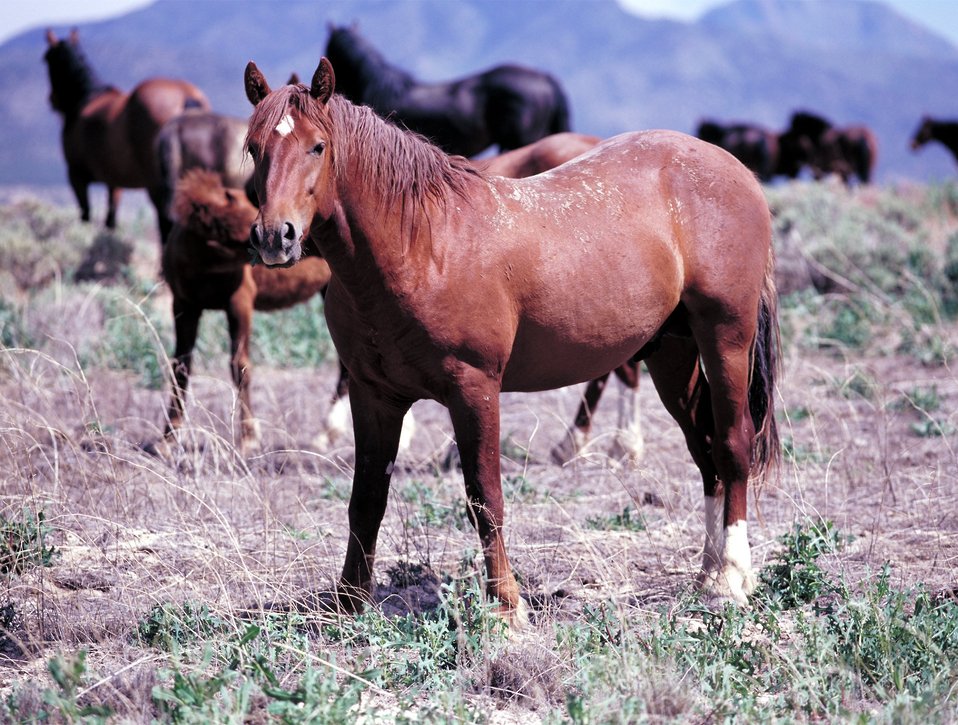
Onaqui Herd near Dugway, Utah.